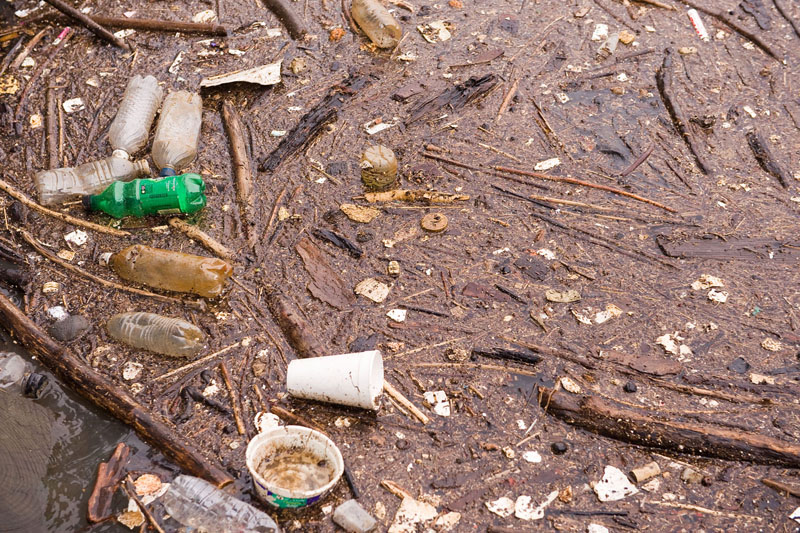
Flotsam in Anacostia River, Washington, DC, 2011 USEPA photo by Eric Vance